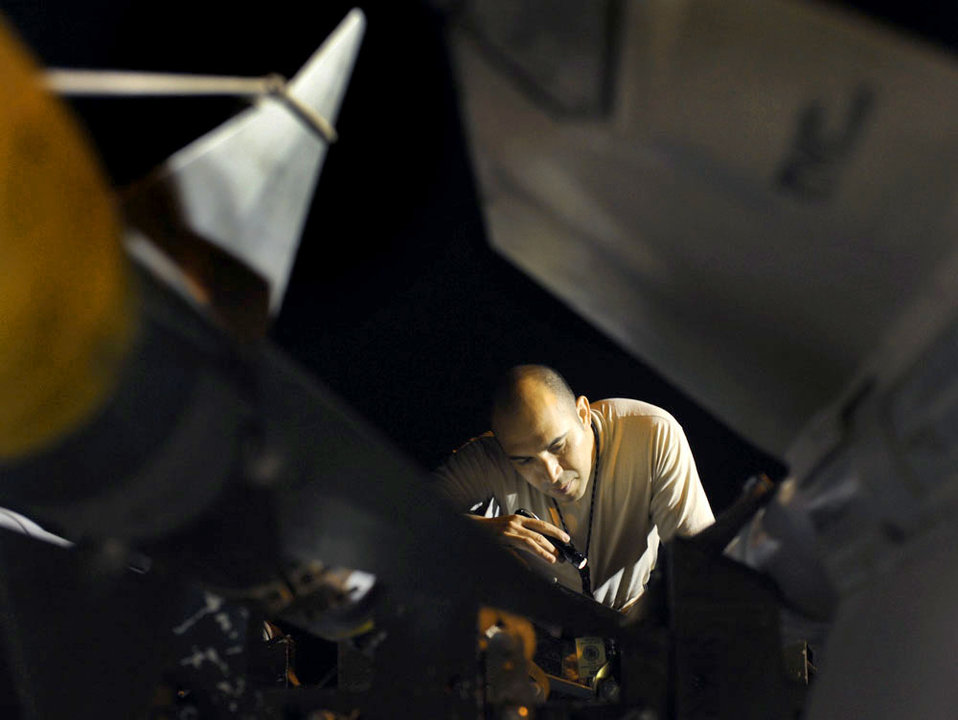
Osan Airmen host munitions exercise

Tech. Sgt. Johnny Rodriquez checks GBU12 munitions for technical accuracy in the in-check area of the bomb dump during the Combat Ammunitions Production Exercise May 25, 2010, at Osan Air Base, South Korea. Sergeant Rodriquez is a munitions maintainer from the 51st Munitions Squadron at Osan AB. CAPEX is a non-rated exercise held once a year in the Pacific Air Force region. It provides training on non-nuclear reserve munitions production in integrated tasks orders and planning.